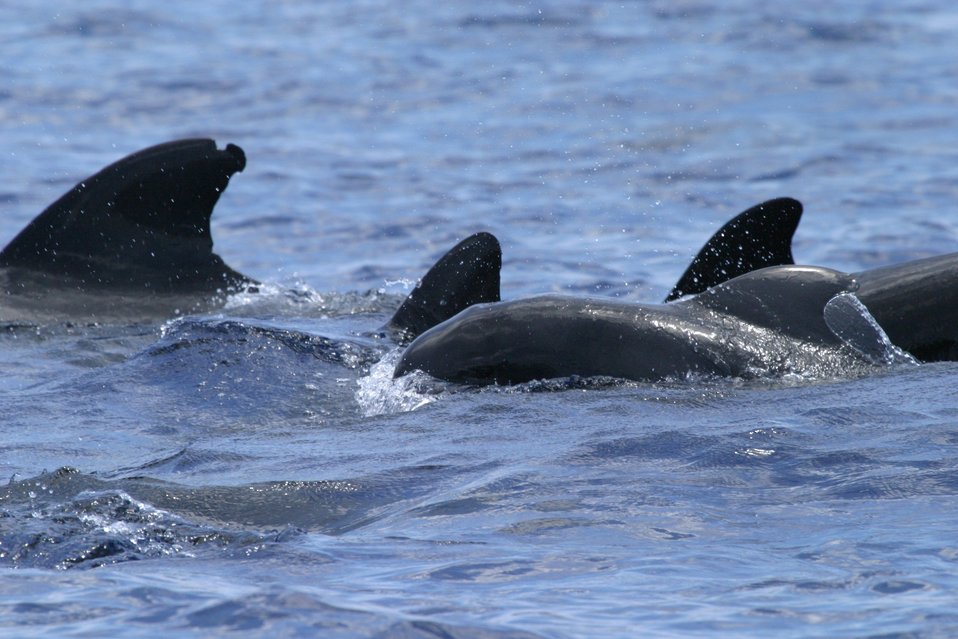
Pilot whales